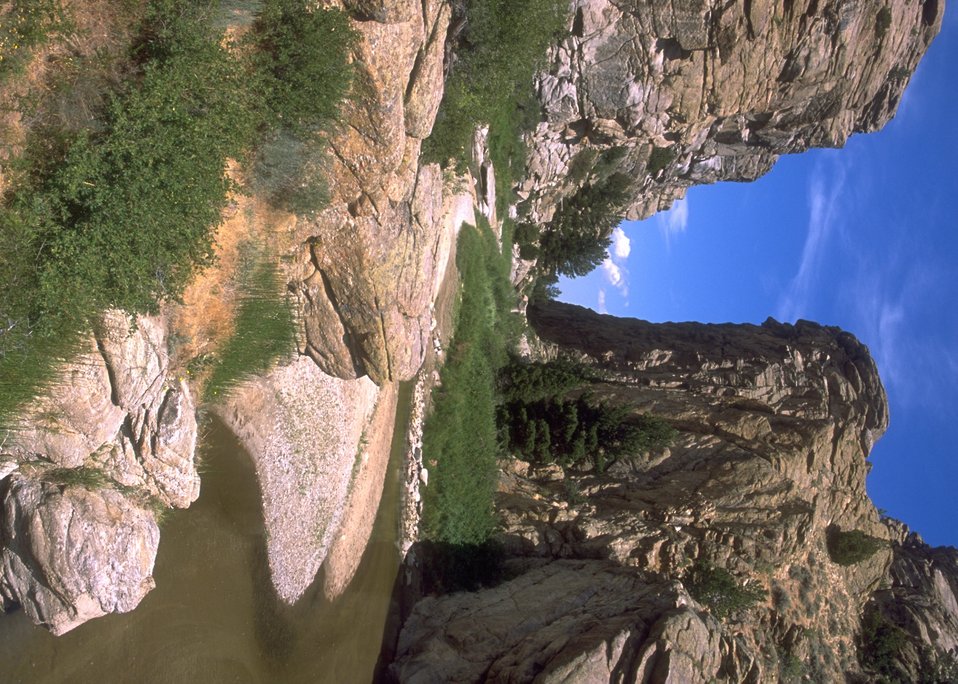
Devil's Gate historic site, Rawlins Field Office.